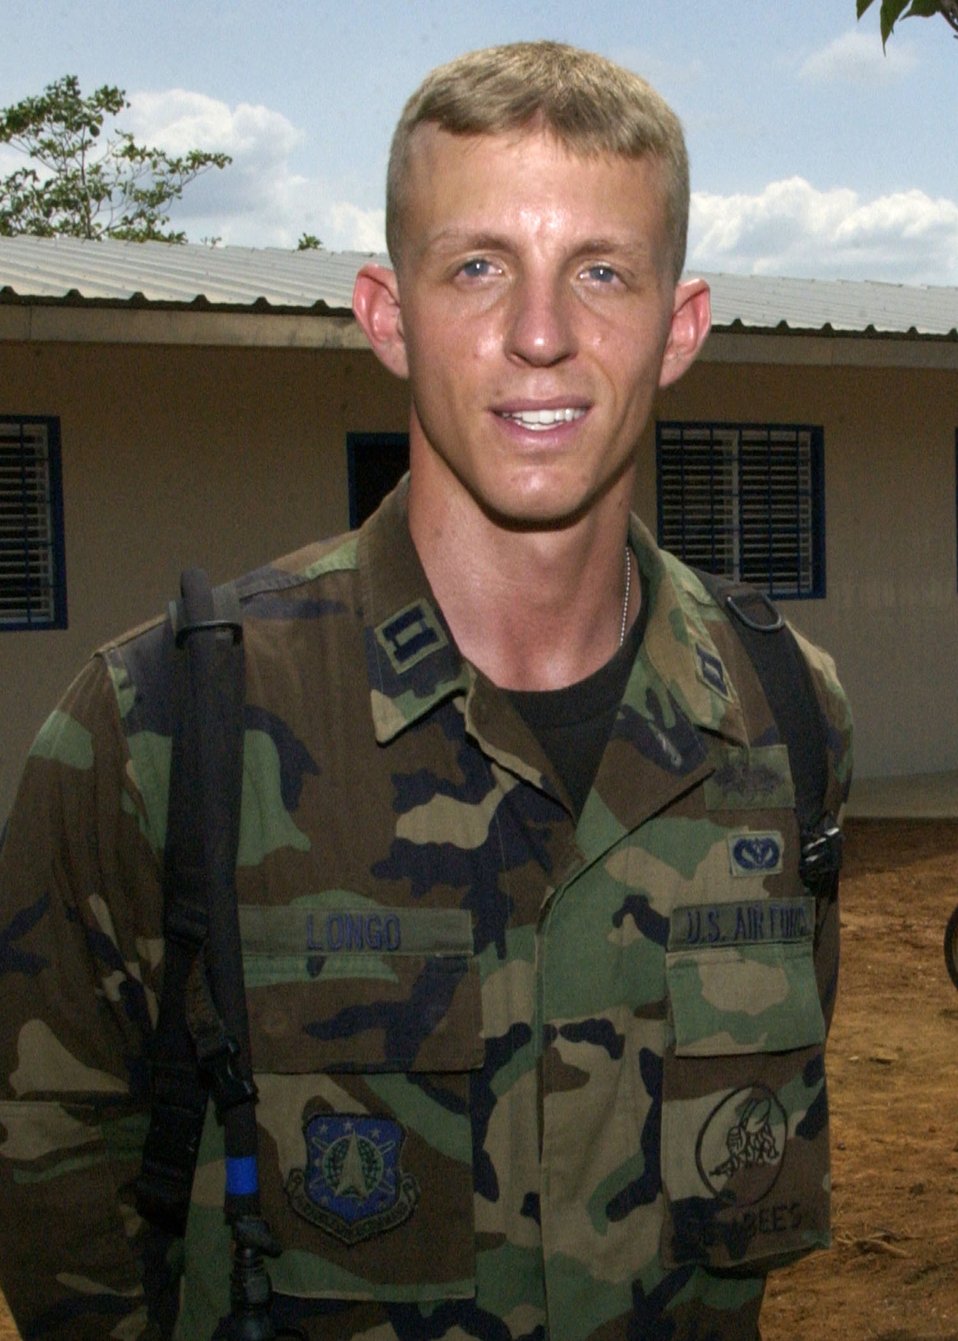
Airman engineers Seabees' construction in Panama

LLANO DE PIEDRA, Panama -- Capt. Star Longo stands outside the community center the Seabees constructed here. He is the commander of the U.S. Naval Mobile Construction Battalion 40 (Seabees) attached to Joint Task Force Armadillo. Task Force Armadillo is part of New Horizions 2005, a U.S. Southern Command sponsored annual training and humanitarian exercise. Captain Longo is on a two-year exchange program with the Seabees.